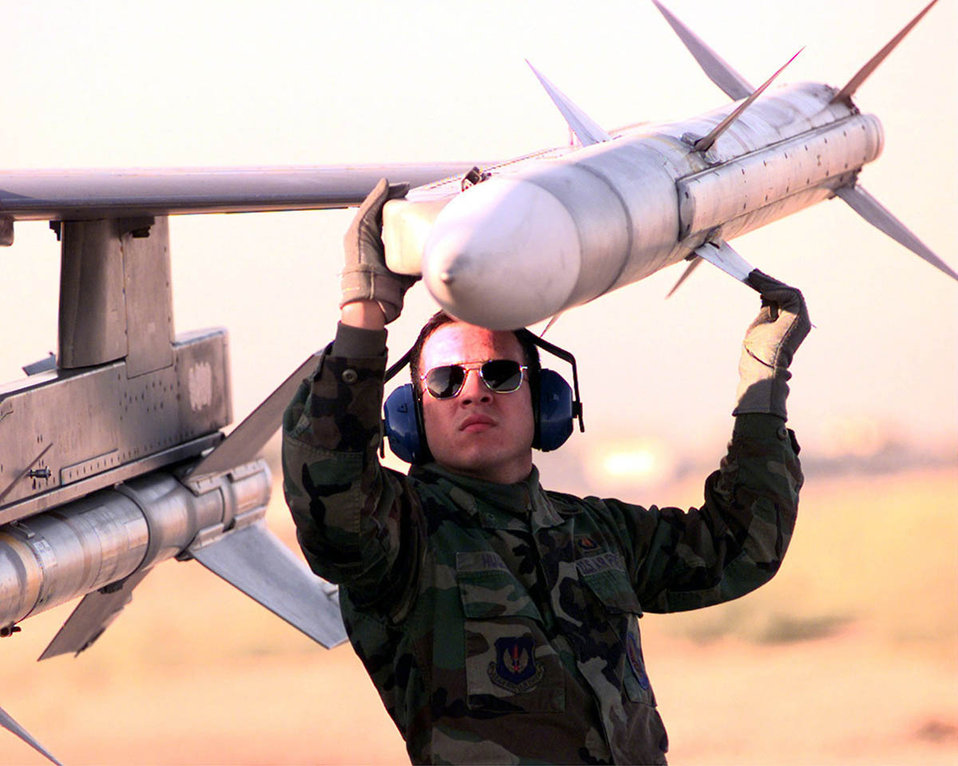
Missile man

OPERATION NORTHERN WATCH -- Armament technician Senior Airman Hector Huguet of the 23rd Expeditionary Fighter Squadron checks a missile on an F-16CJ Fighting Falcon before takeoff from Incirlik Air Base, Turkey, as part of Operation Northern Watch. The operation involves patrolling the northern no-fly zones of Iraq.